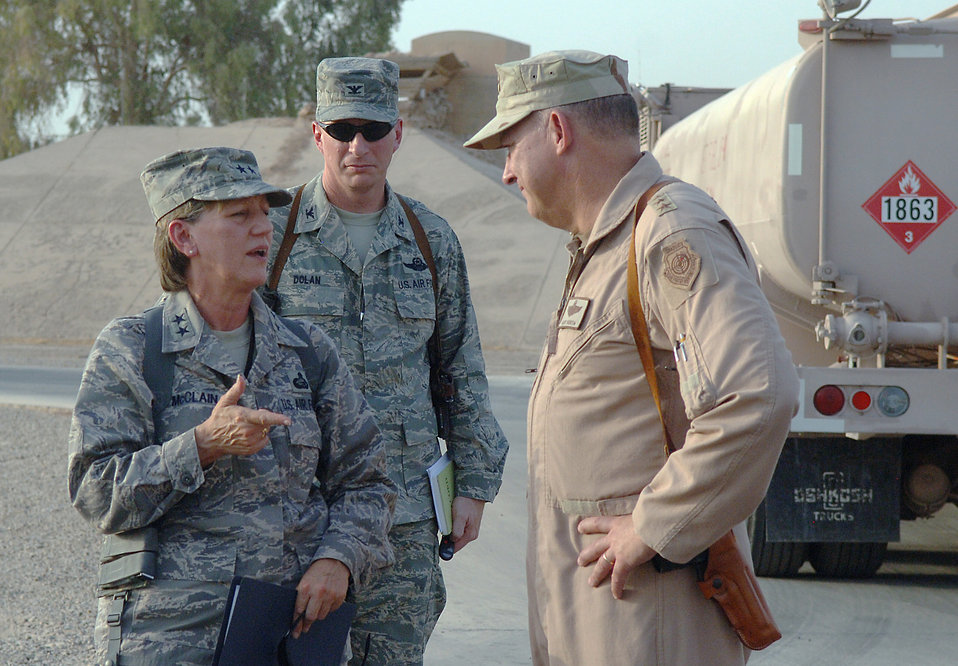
AFPC commander discusses personnel support for deployed Airmen

Maj. Gen. K. C. McClain (left) speaks with Lt. Gen. Gary North (right) and Col. John Dolan about their tour of the 332nd Expeditionary Logistics Readiness Squadron's Petroleum, Oil and Lubricants Management Flight at Joint Base Balad, Iraq, Aug. 27. General McClain accompanied General North on a tour of the U.S. Central Command's area of responsibility. This is General McClain's first visit to the Middle East since assuming command of the Air Force Personnel Center in January. General North is the commander of U.S. Air Forces Central and the Combined Forces Air Component commander. Colonel Dolan is the 332nd Air Expeditionary Wing vice commander.